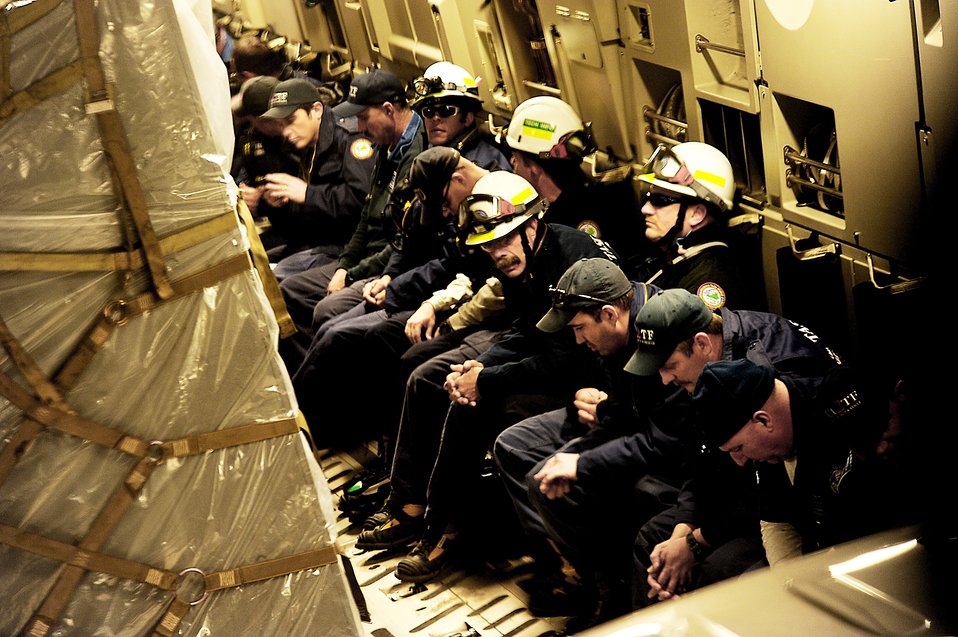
Haiti Earthquake Relief

Members from the Virginia Task Force 2 Urban Search and Rescue team and supplies fly to Haiti aboard a C-17 Globemaster III from Travis Air Force Base, Calif., Jan. 15, 2010, at Norfolk, Va. The Virginia Task Force 2 team is heading to Haiti as part of the Haitian earthquake relief effort.